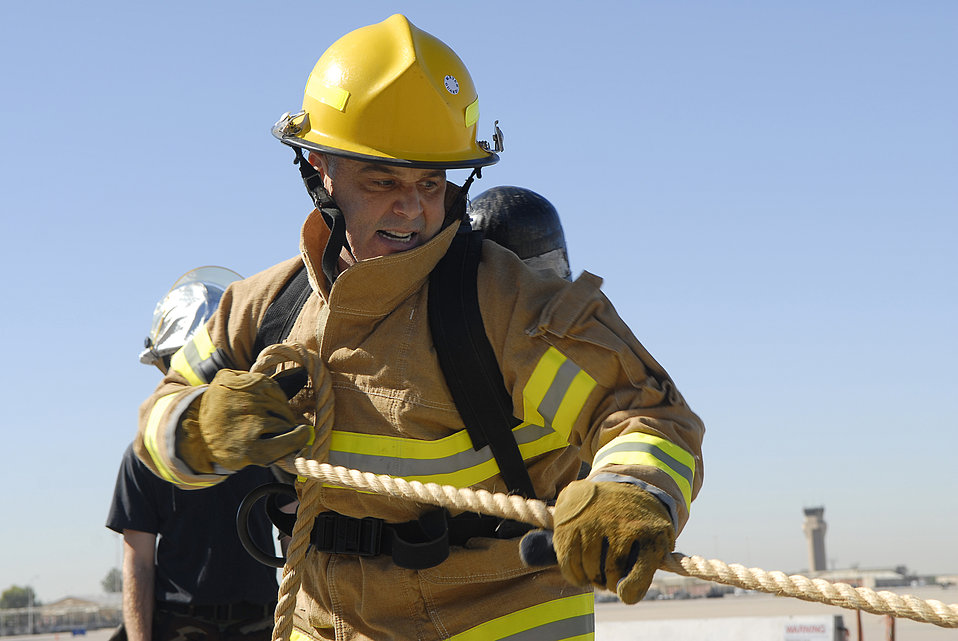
One more tug

Col. Jeffrey Weed helps pull a rope attached to a weighted pallet to the finish line during the Firefighter Combat Challenge Oct. 16, 2009, at the fire station. Colonel Weed is the vice commander for the 56th Fighter Wing, and competed in two events of the challenge.